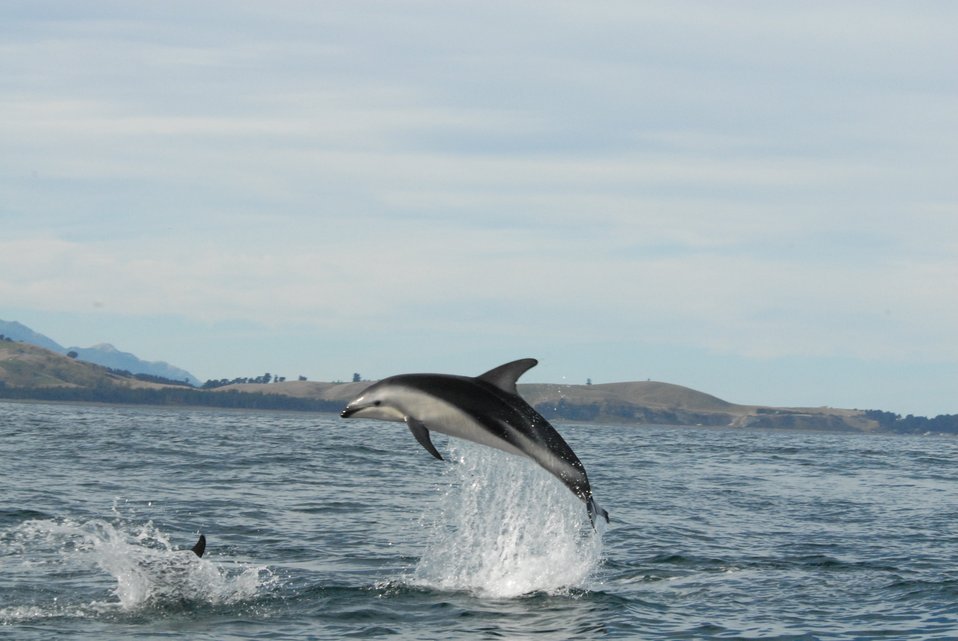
Dusky dolphin (Lagenorhynchus obscurus)